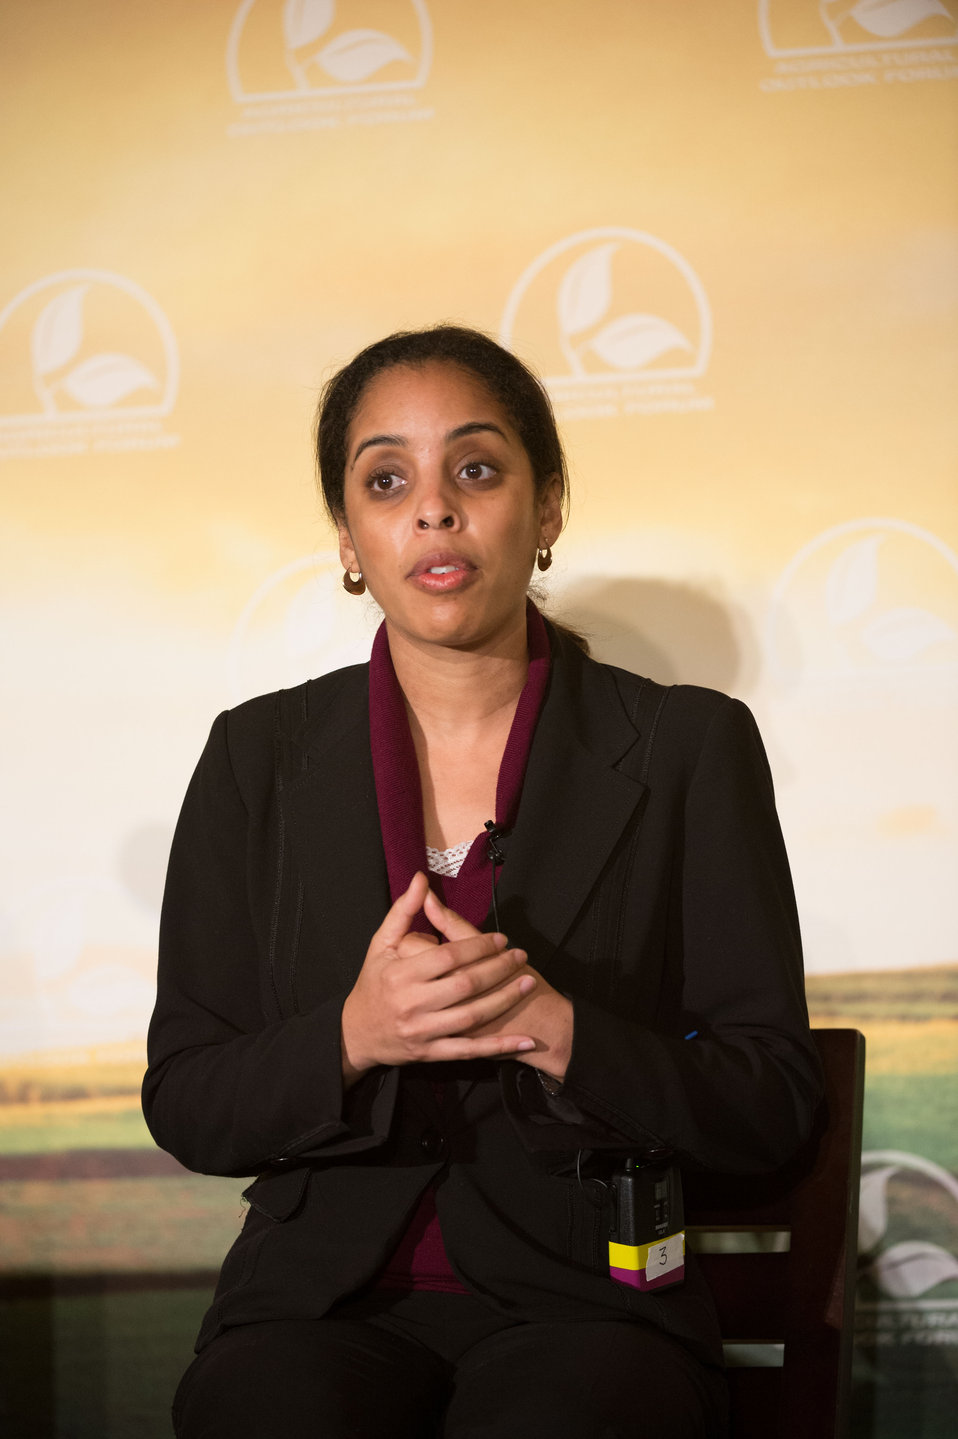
Building Markets Here and Abroad panelist Mercaris Founder at the 2014 Agricultural Outlook Forum in Arlington, VA., on Thursday, Feb. 20, 2014. The U.S. Department of Agriculture's (USDA) annual Agricultural Outlook Forum brings together the agricultural community to discuss policy, trade, science, rural development, and the economic outlook for the coming year. The Forum also focuses on forestry, health and nutrition issues, and the changing dynamics and face of rural America.USDA photo by Bob Nichols.